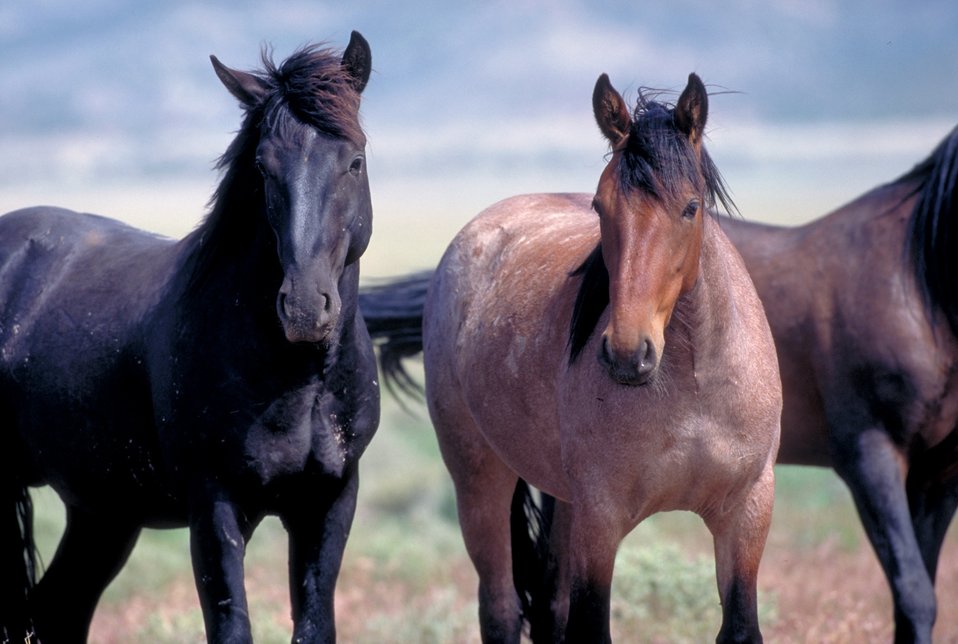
Onaqui Herd near Dugway, Utah.